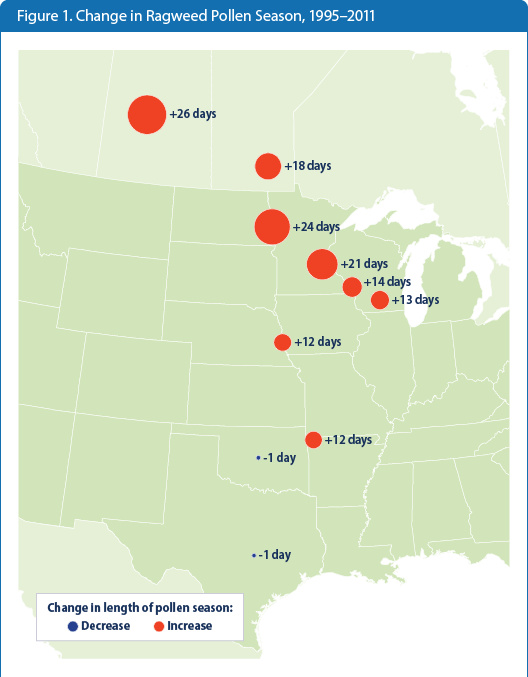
Climate Change Indicators - Change in Ragweed Pollen Season

Did you know the length of ragweed pollen season has increased especially in the northern part of the U.S.?